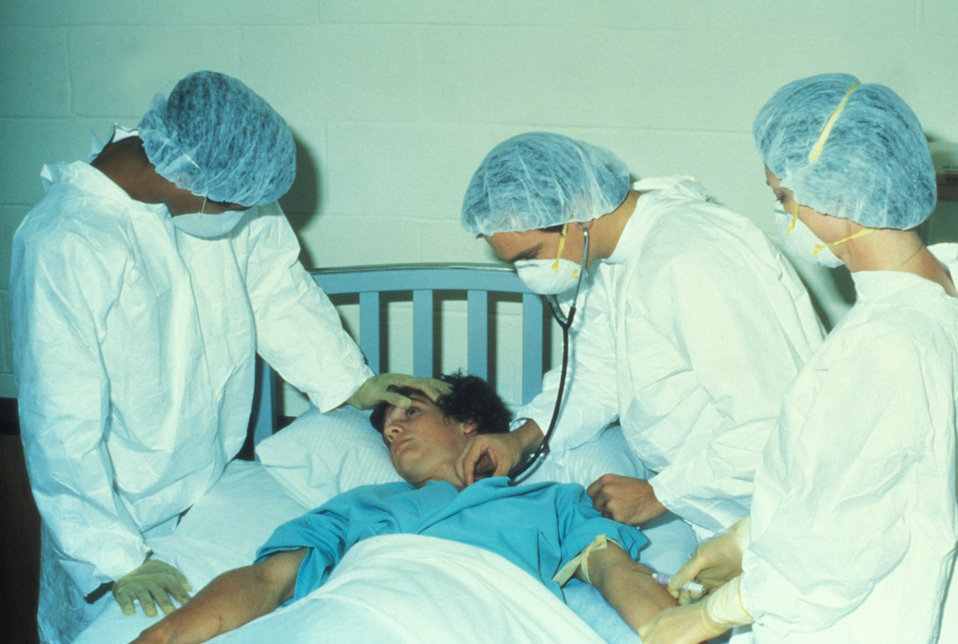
This image is from a book entitled 'A Day in the Life of a Medical Detective', by Sandra L. Ford, published by Time/Life, Inc.